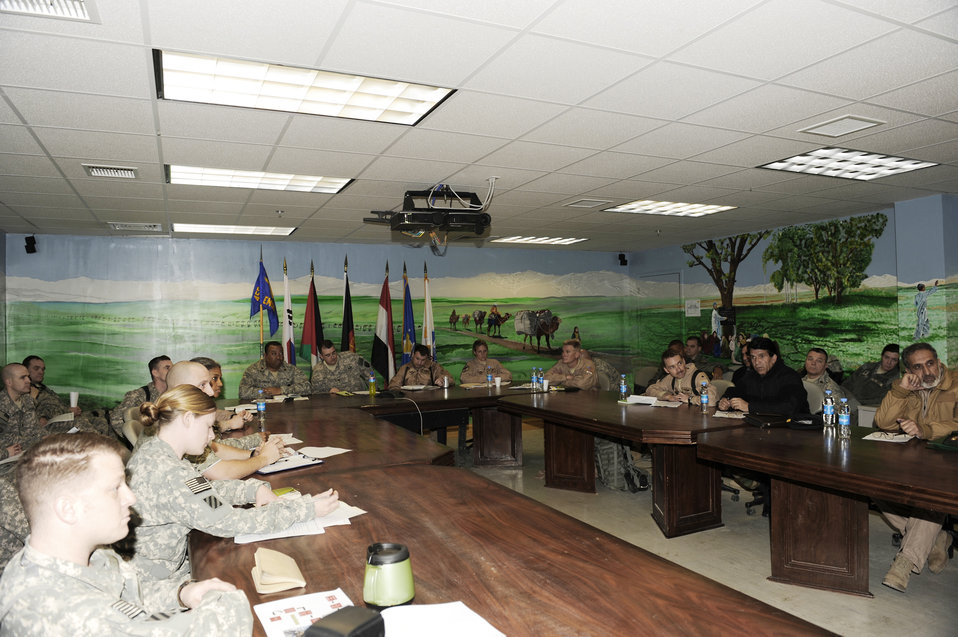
ANAAC Conference

Afghan National Army Air Corps and coalition forces attend a meeting March 6, 2010, at the Craig Joint Theater Hospital at Bagram Airfield, Afghanistan. During this meeting, Afghan and coalition forces discussed the evolution of the medical evacuation mission in Afghanistan.